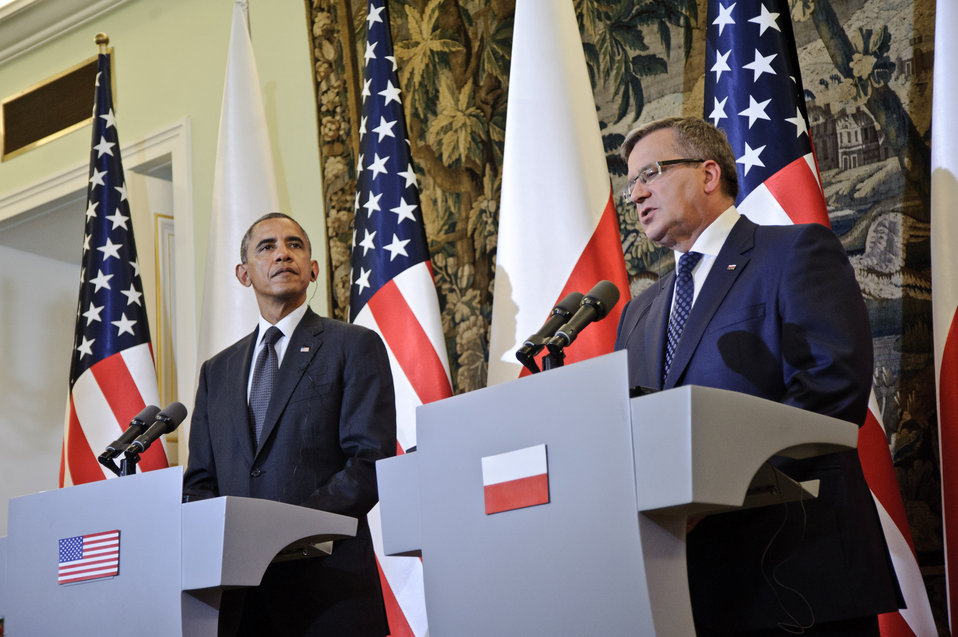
President Obama and Polish President Komorowski Address Reporters in Warsaw

U.S. President Barack Obama listens to a question during a news conference with Poland's President Bronislaw Komorowski at Belweder Palace in Warsaw, Poland, on June 3, 2014. [U.S. Mission to Poland photo by Jakub Szymczuk]